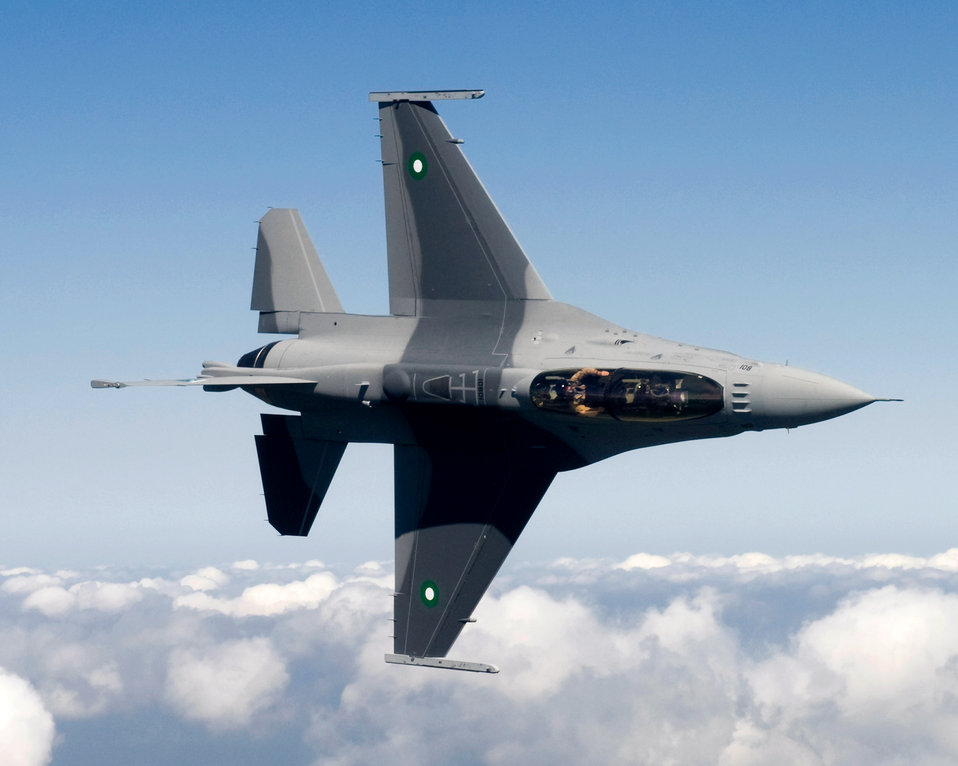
F-16s to Pakistan

Air Force officials are set to deliver the first of 18 new F-16 Fighting Falcon jet fighters to the Pakistan air force.